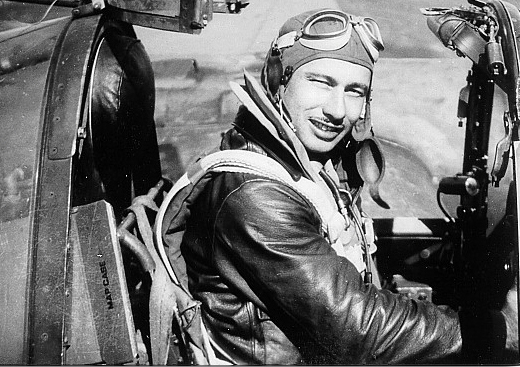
Carl Hoenshell

1940's -- First Lt. Carl Hoenshell poses in his P-38 Lightning during World War II. He was declared killed in action in 1945, but his remains were not recovered until 2002. His family buried him with full military honors in his hometown of Ossowa, Mich., on May 25.